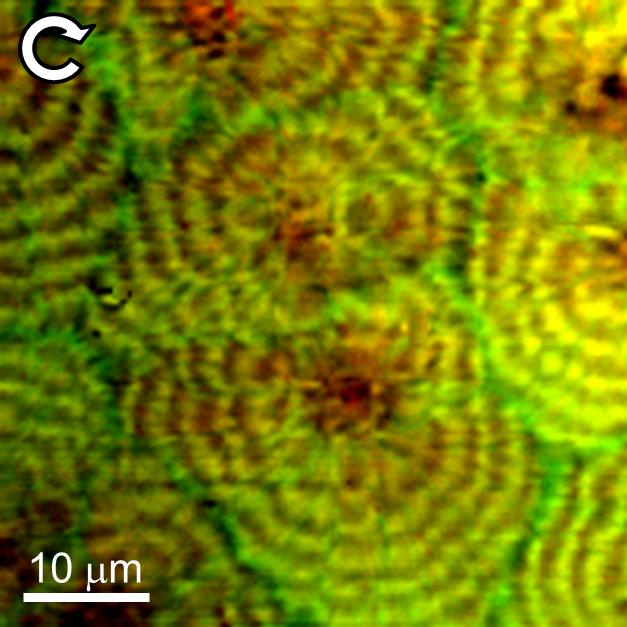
BCARS

Typical BCARS composite image of a polyethylene blend taken at NIST showing circular polarization response. LLD polyethylene shows red in this mode, while the HD polyethylene with deuterium substituted for hydrogen is green.